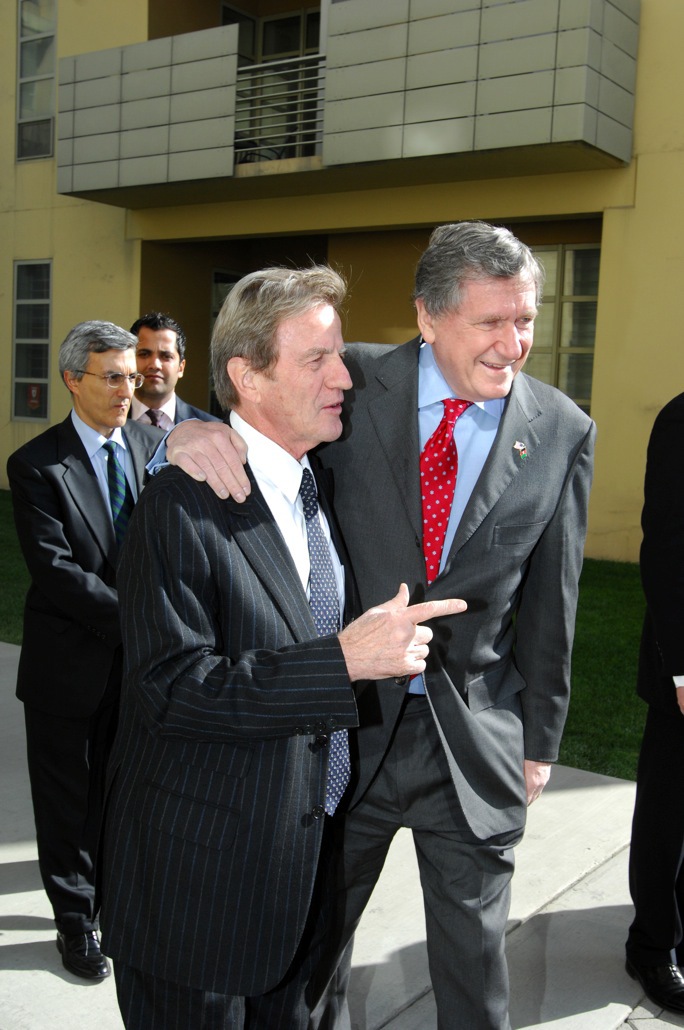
Secretary Clinton Travels to Afghanistan

Special Representative for Afghanistan and Pakistan Richard C. Holbrooke (right) greets officials at the U.S. Embassy in Kabul, Afghanistan November 19, 2009. Secretary Clinton traveled to Afghanistan to attend President Hamid Karzai's November 19, 2009 inauguration ceremony, meet with Afghanistan's leadership, international partners and allies, U.S. troops, staff in Provincial Reconstruction Teams, and Embassy staff.